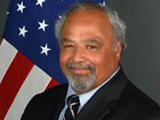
Eric Goosby 160x120